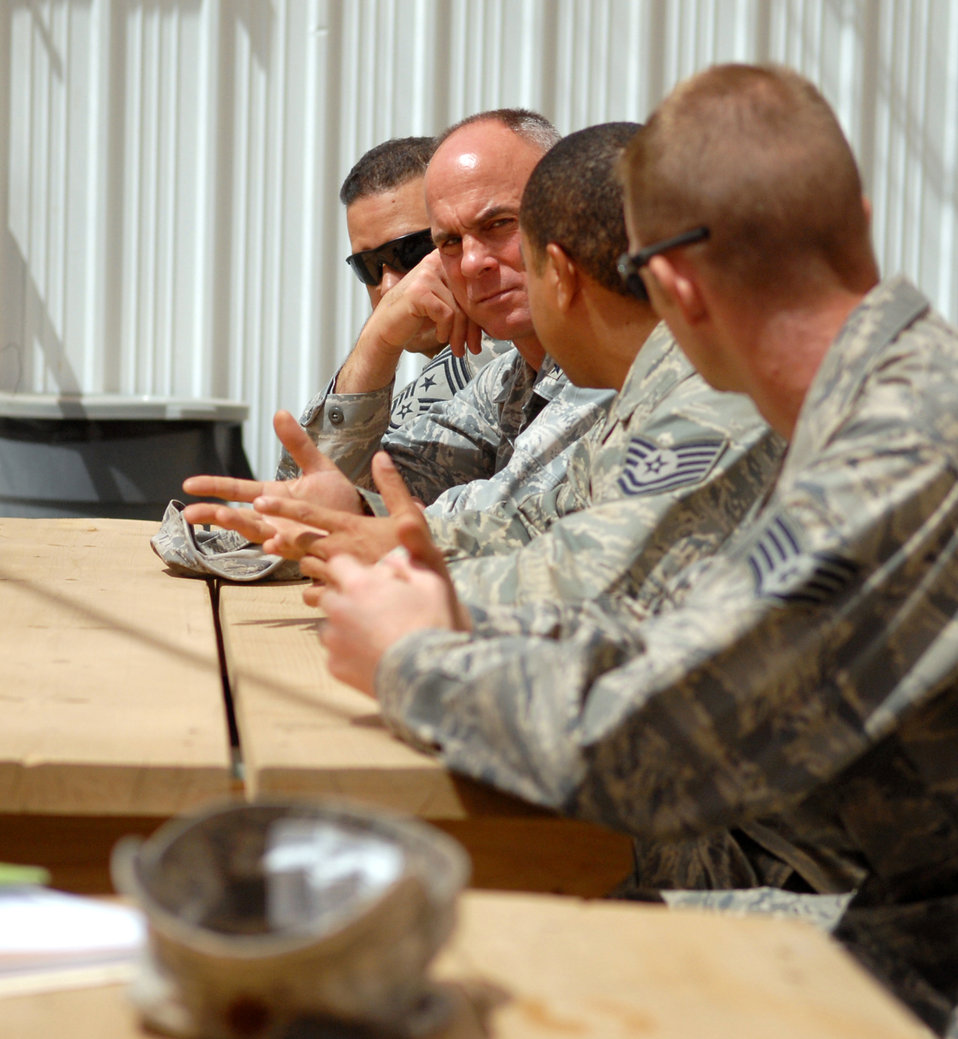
JET Airmen

Brig. Gen. Craig A. Franklin speaks with members of the 732nd Expeditionary Logistics Readiness Squadron redistribution property assistance team May 14, 2010, at forward operating base Kalsu, Iraq. The Airmen at the RPAT yard relieve demobilizing units in the local area of excess theater-provided equipment. General Franklin is the 332nd Air Expeditionary Wing commander.